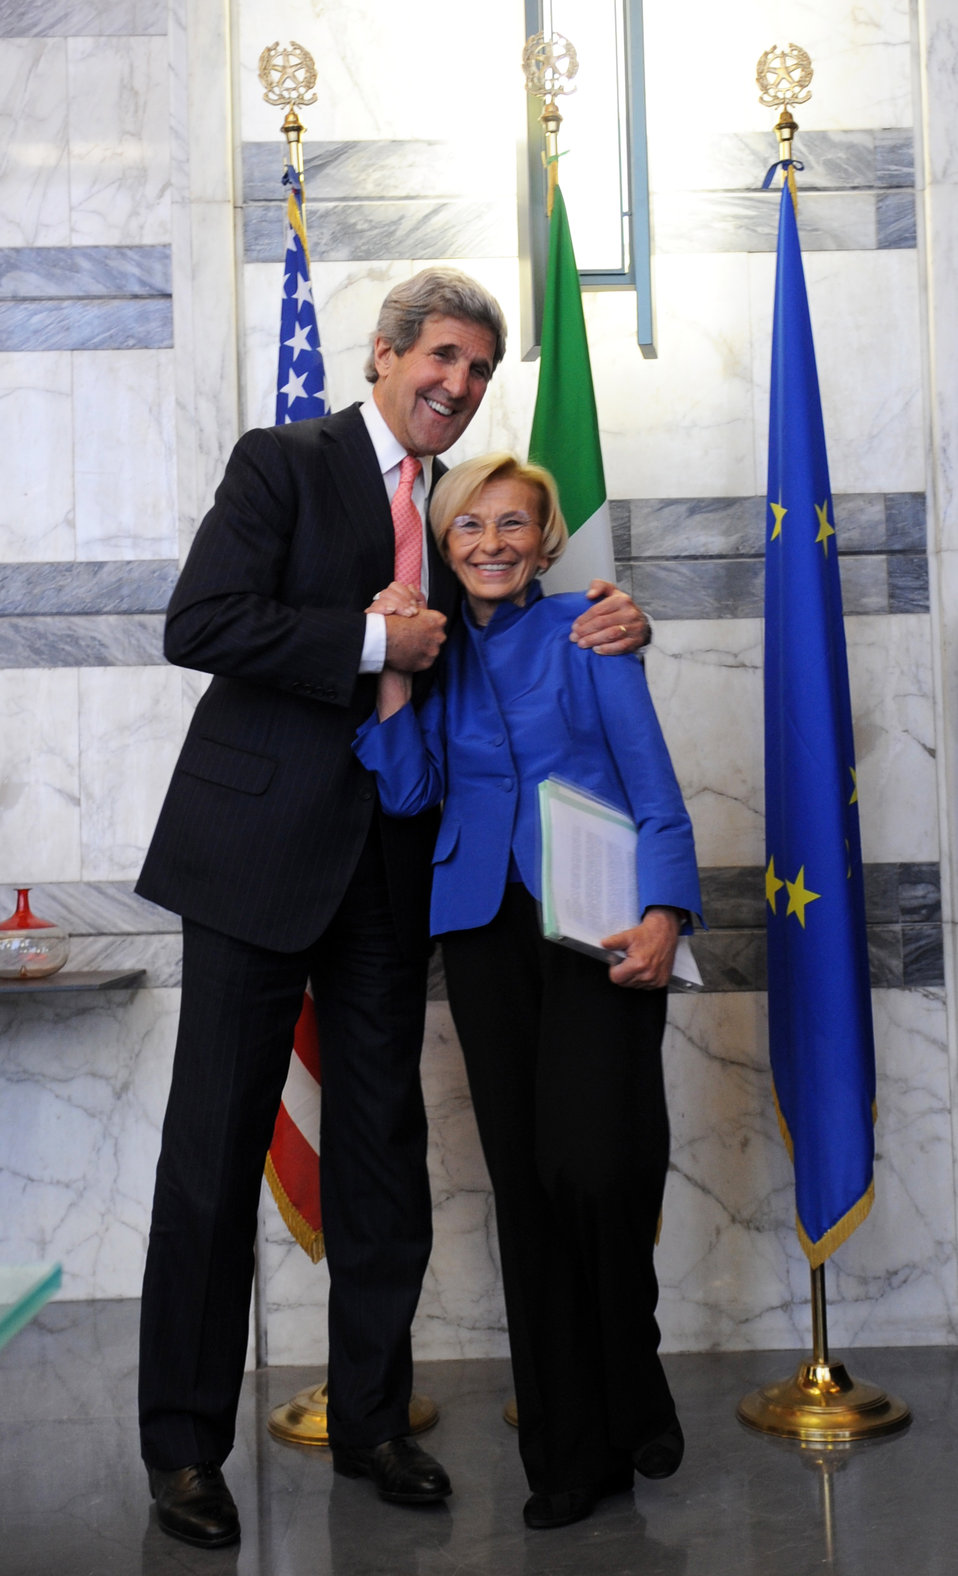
Secretary Kerry and Italian Foreign Minister Bonino Pose for a Photo

U.S. Secretary of State John Kerry and Italian Foreign Minister Emma Bonino pose for a photo before their meeting in Rome, Italy, on May 9, 2013.